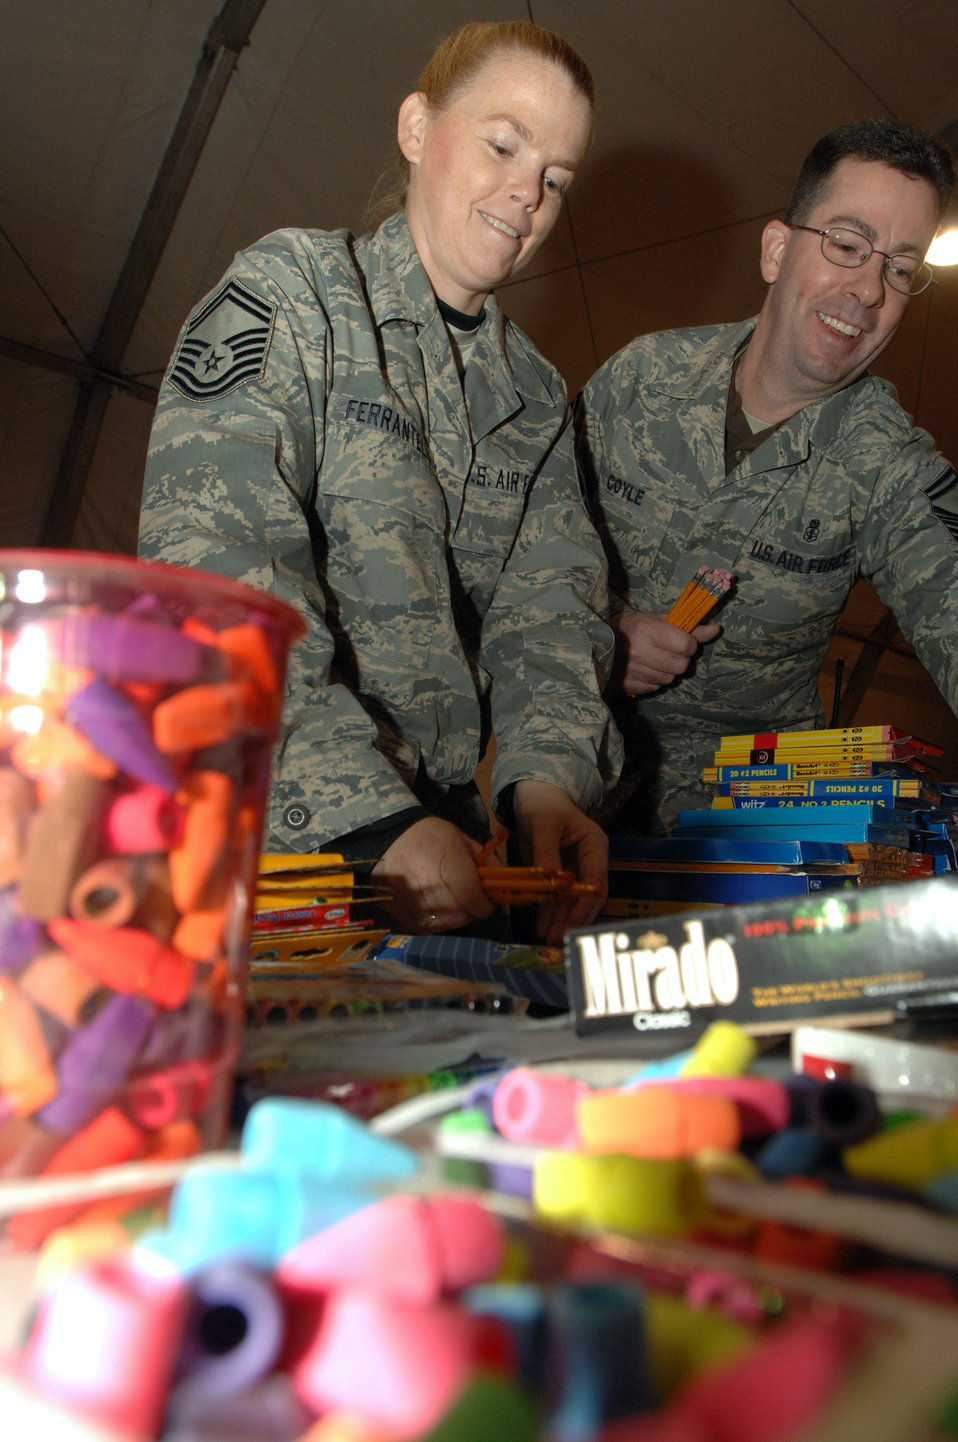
Iraqi Operation Child donations packed, ready

Master Sgt. Stephen Charles hands out school supplies in support of Operation Iraqi Child at Ali Base, Iraq, Dec. 22. In just over a month, Airmen on base collected thousands of school supply items, soccer balls, stuffed animals and toys from family and friends in the U.S. The donated items which will be given to Iraqi families in the An Nasiriyah area. The senior NCOs are assigned to the 407th Air Expeditionary Group.